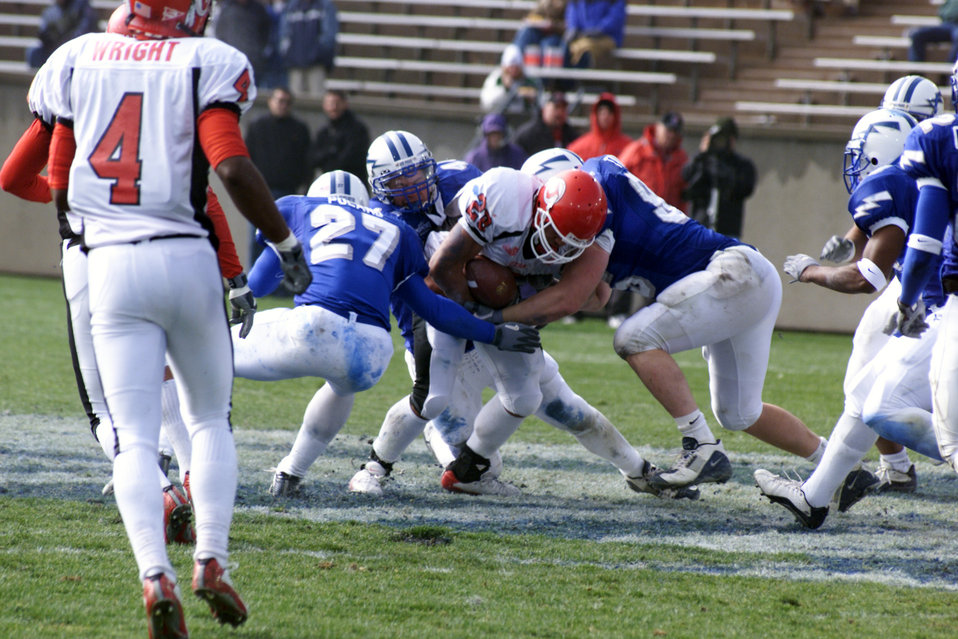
Falcons fall in triple overtime

U.S. AIR FORCE ACADEMY, Colo. -- Academy Falcon defenders Dennis Poland (27), Trevor Hightower (44) and Nicholas Taylor (95) combine to stop Utah running back Mike Liti cold. While the Falcons held Liti to only 53 yards, Utah went on to win the game 45-43 in triple overtime Nov. 1.